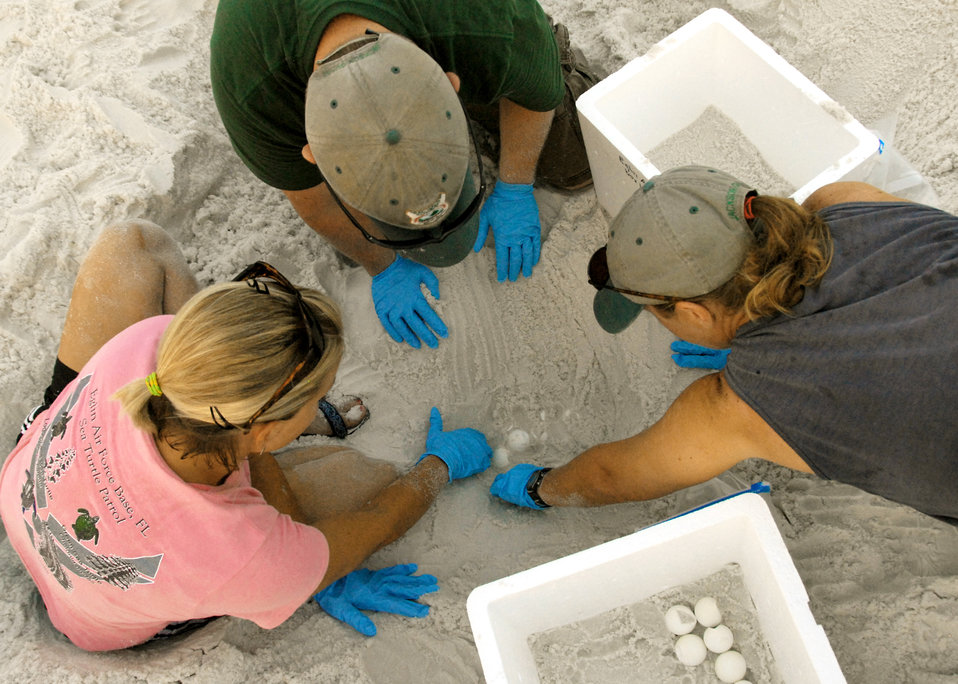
Sea turtles

(Left to right) Erica Laine, Dusty Varble and Kathy Gault remove sea turtle eggs from their nest Aug. 2, 2010, on a beach at Eglin Air Force Base, Fla. The eggs will be transported to the east coast so the turtles can be released without the threat of encountering oil from the spill in the Gulf of Mexico. Ms. Laine, Mr. Varble and Ms. Gault are 96th Civil Engineer Squadron biologists.